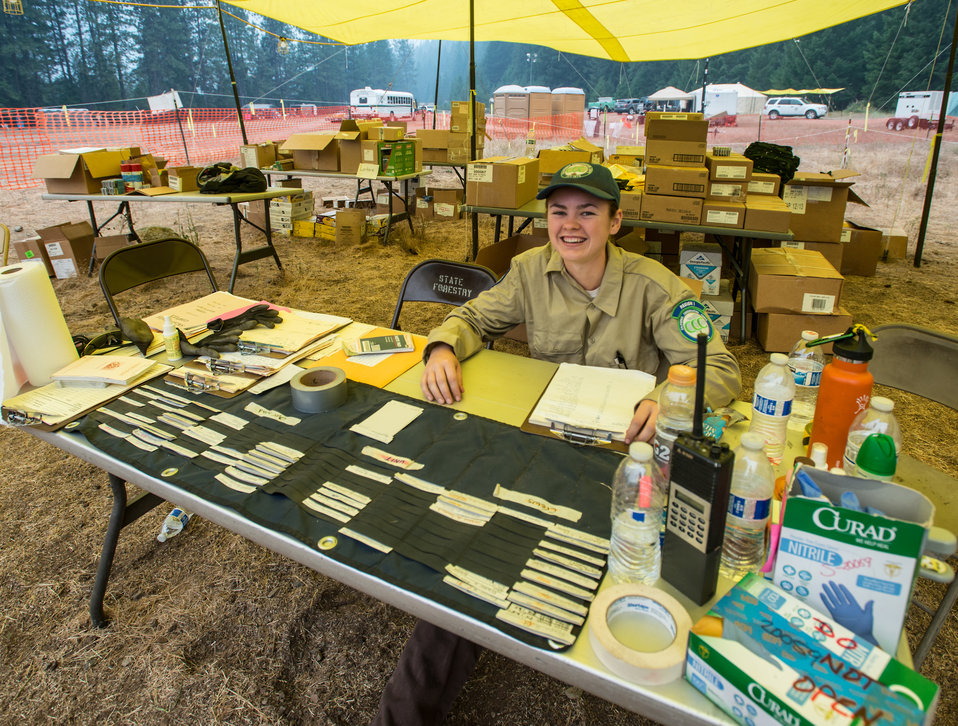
California Conservation Corp (CCC), Region 1, corps member, Stacey Wilson CA, handles supply requests and accounting, during the Salmon River Complex Fire burning northwest of Sawyers Bar and west of Etna and Yreka, CA in the Klamath National Forest, on Tuesday, Aug. 6, 2013. It is vital that supplies and equipment are readily available for issue or replacement as needed. Supplies are shipped from the National Interagency Supply Cache System depots and other caches to wherever needed. The CCC works for a wide range of project sponsors throughout California, including state, federal, city and county agencies, school districts, nonprofit organizations and private industry. Work for CCC includes conserving or enhancing the California’s natural resources or providing another public benefit, and work offering corps members an opportunity to boost employable skills. The sponsoring agency, such as the U.S. Department of Agriculture (USDA) Forest Service (USFS), typically provides technical plans/specifications, materials and on-site technical supervision.